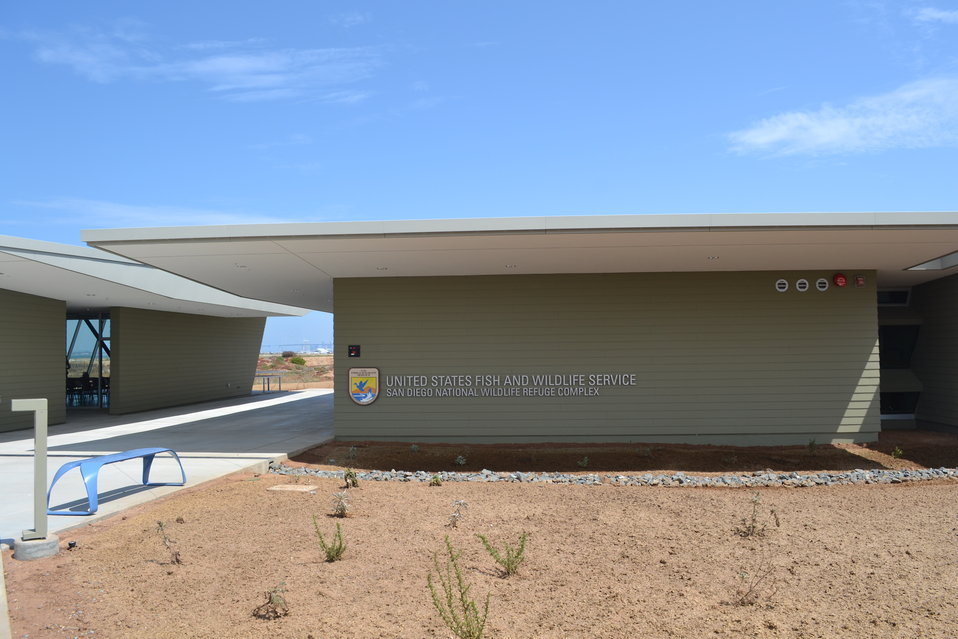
Front entrance of new Administrative Headquarters

Photo taken on July 5, 2011.